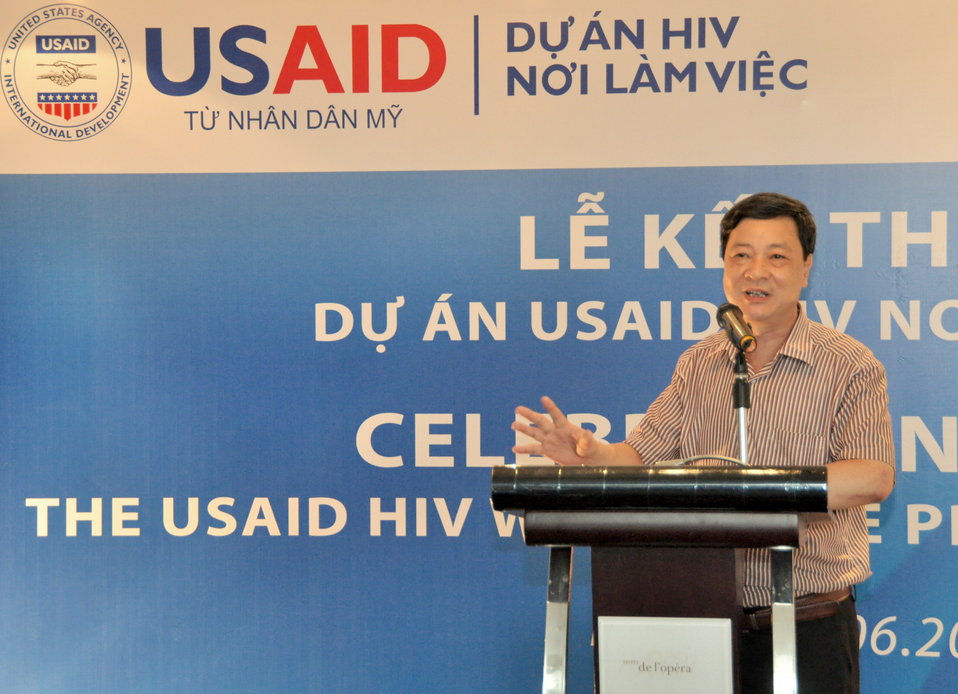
Mr. Le Duc Hien Deputy General Director of Department of Social Vices Prevention under Ministry of Labor, Invalids and Social Affairs, speaks at the completion event.

Hanoi, June 20, 2013.